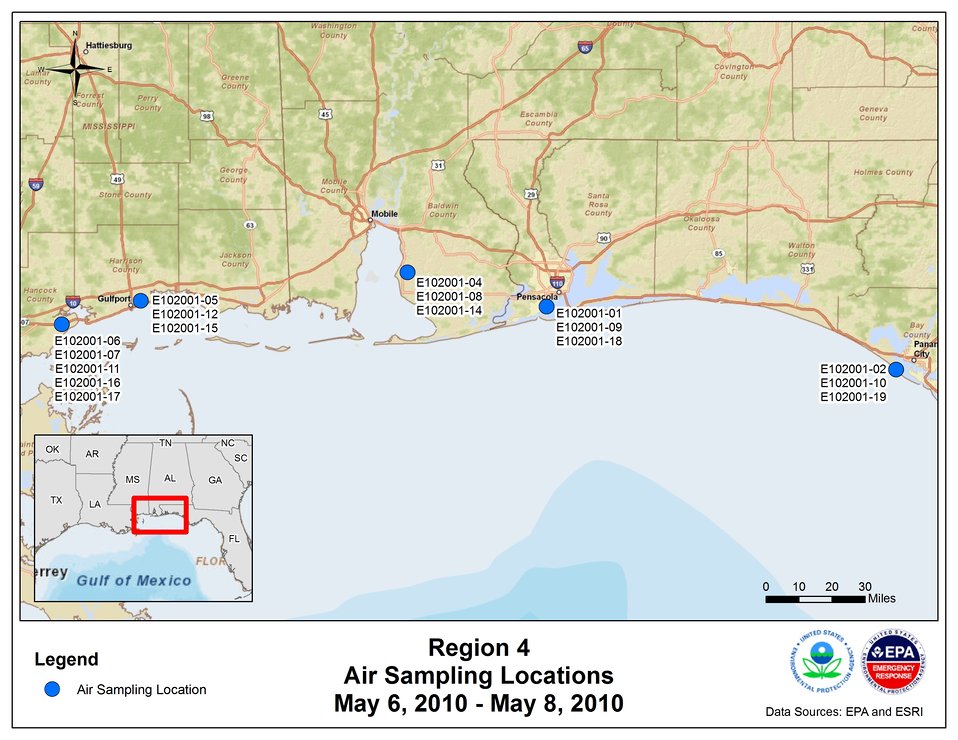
EPA Air Sampling Locations May 6-8, 2010